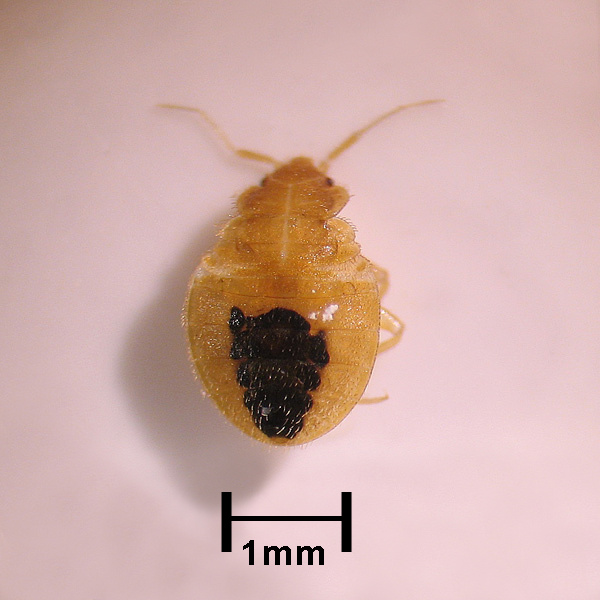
This image depicts a dorsal view of nymphal, , i.e., immature, Cimex lectularius bed bug.